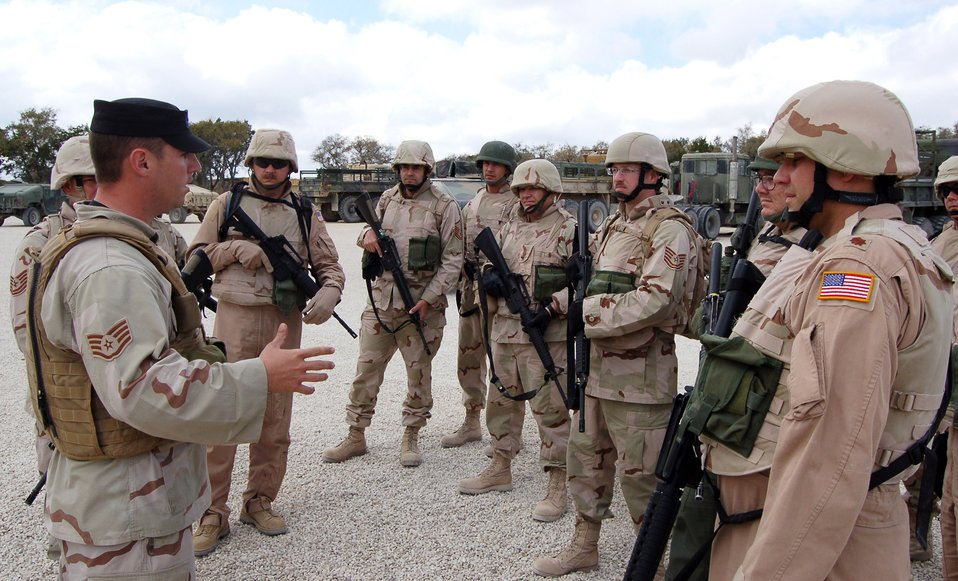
Airmen receive Iraqi training

Staff Sgt Wayne Tokarz briefs students about combat convoy procedures. Sergeant Tokarz is an instructor for a specialized mission course being held at Camp Bullis, Texas. The two week course is the students first step in a mission that will help the Iraqi air force rebuild their technical schools.